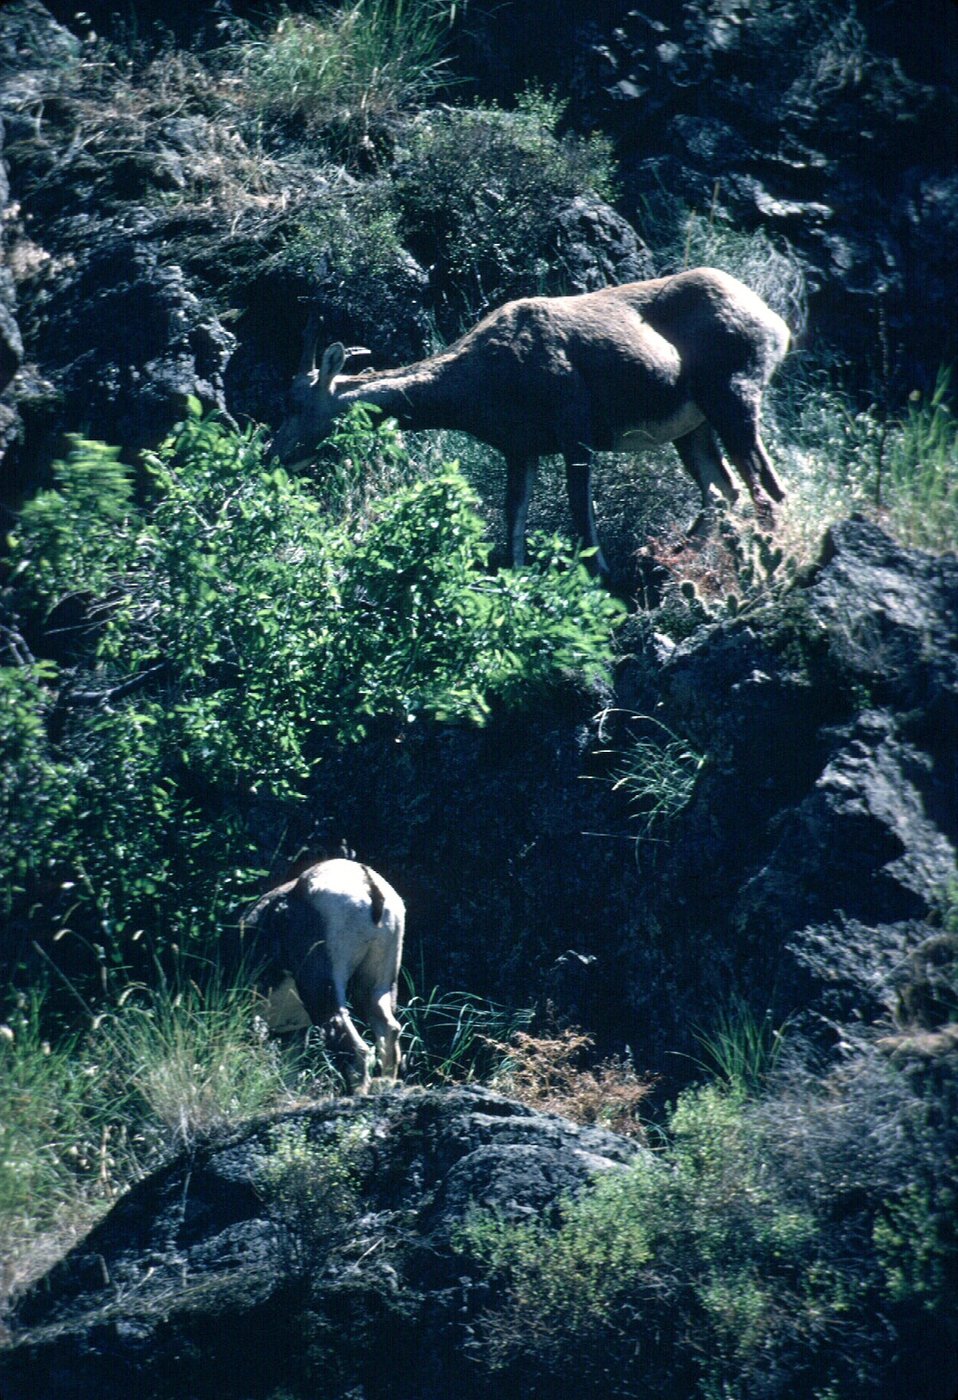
Bighorn sheep UCSC Upper Columbia Salmon Clearwater District